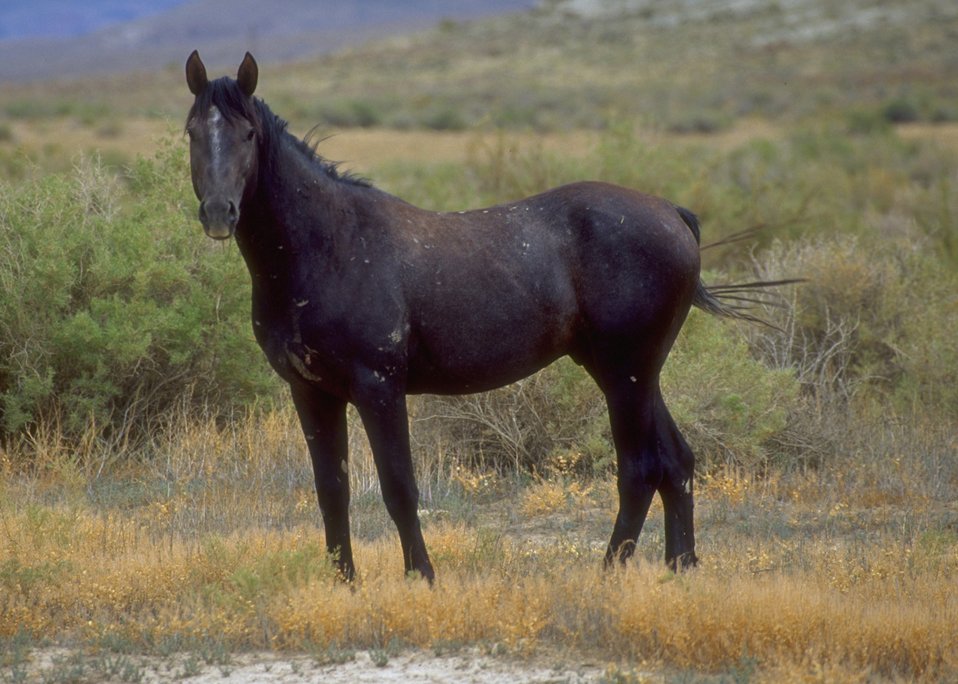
Wild horses, Rock Springs Field Office.